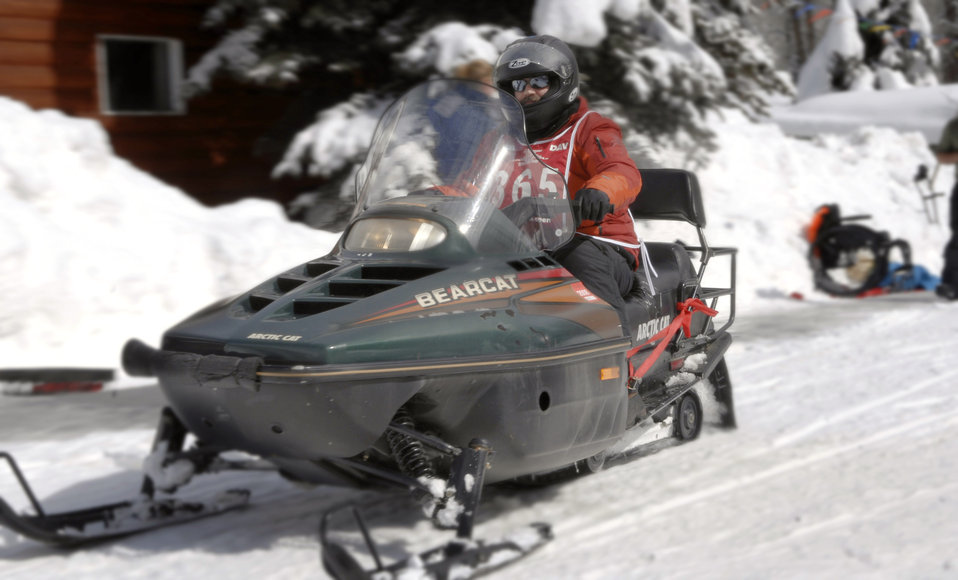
Winter sports clinic helps veterans

Disabled Air Force veteran, William Fry takes off on a snowmobile during the 22nd National Disabled Veterans Winter Sports Clinic held at the Snowmass Village, Colo., April 2. The annual disabled learn-to-ski clinic helps motivate and rehabilitate disabled Department of Defense veterans. It is the largest of its kind in the world. The clinic instructs veterans on Alpine and Nordic skiing, rock climbing, snowmobiling, sled hockey, and more.